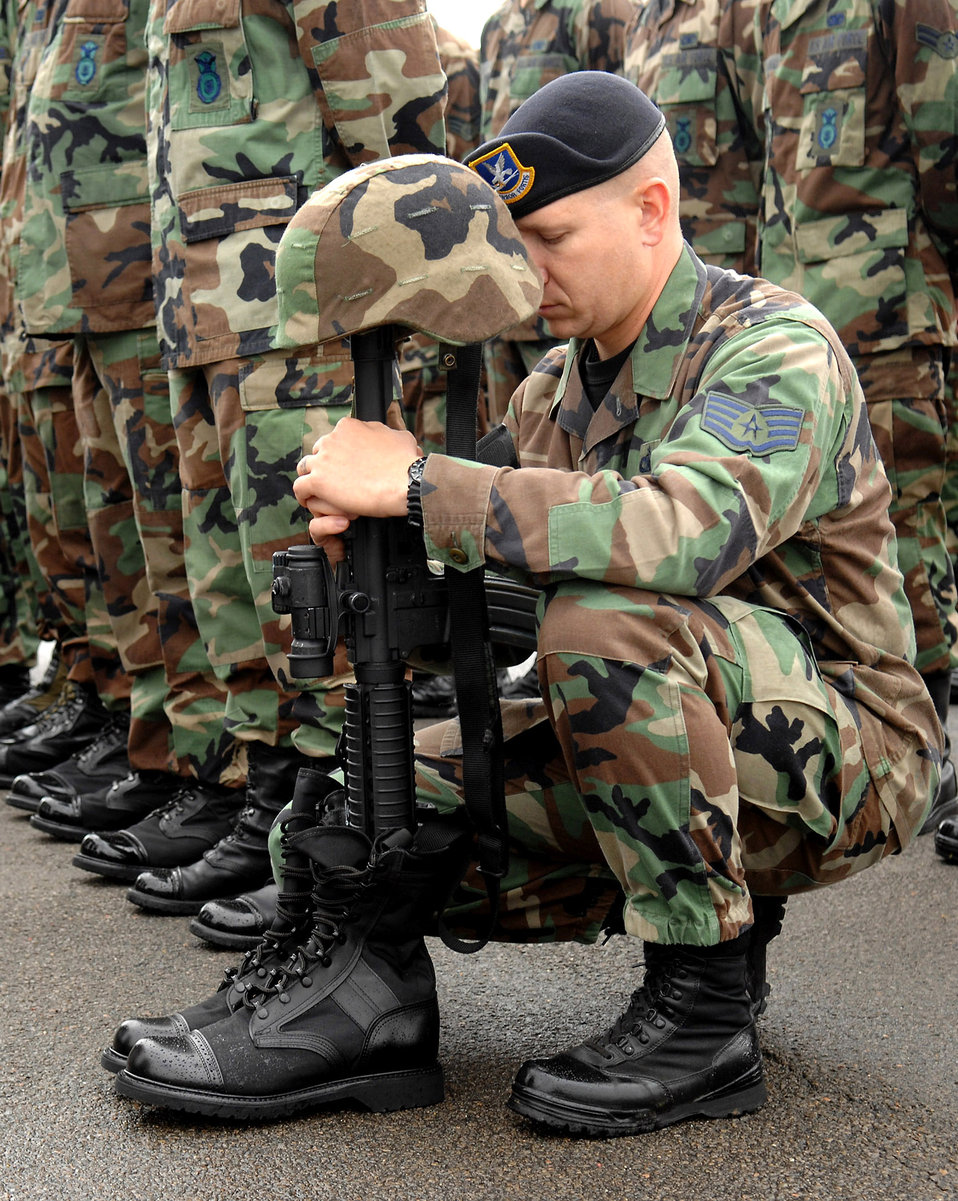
Honoring fallen heroes

Staff Sgt. Robert Culbertson pays his respects during a Final Guard Mount ceremony at Ramstein Air Base, Germany. The ceremony recognizes fallen security forces Airmen.